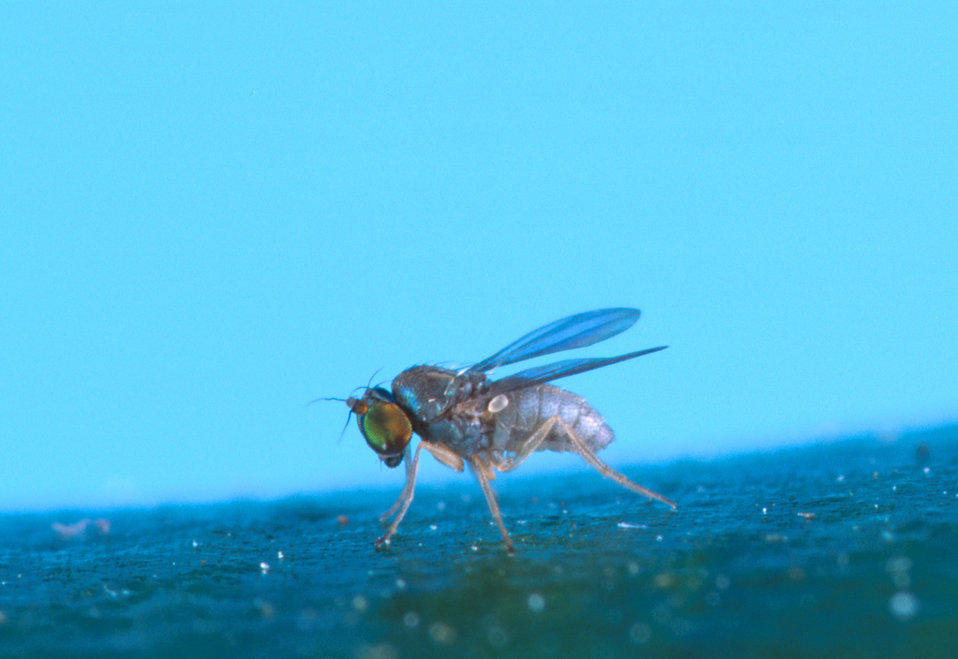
Thrypticus fly (about 2 mm long) rests on a leaf.